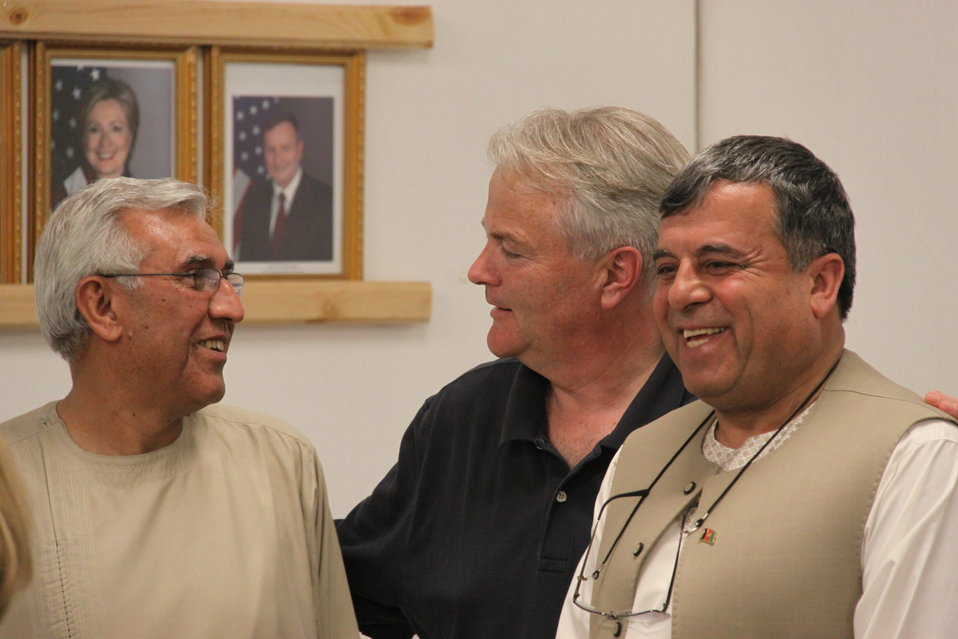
Meeting with Local Leaders in Kandahar